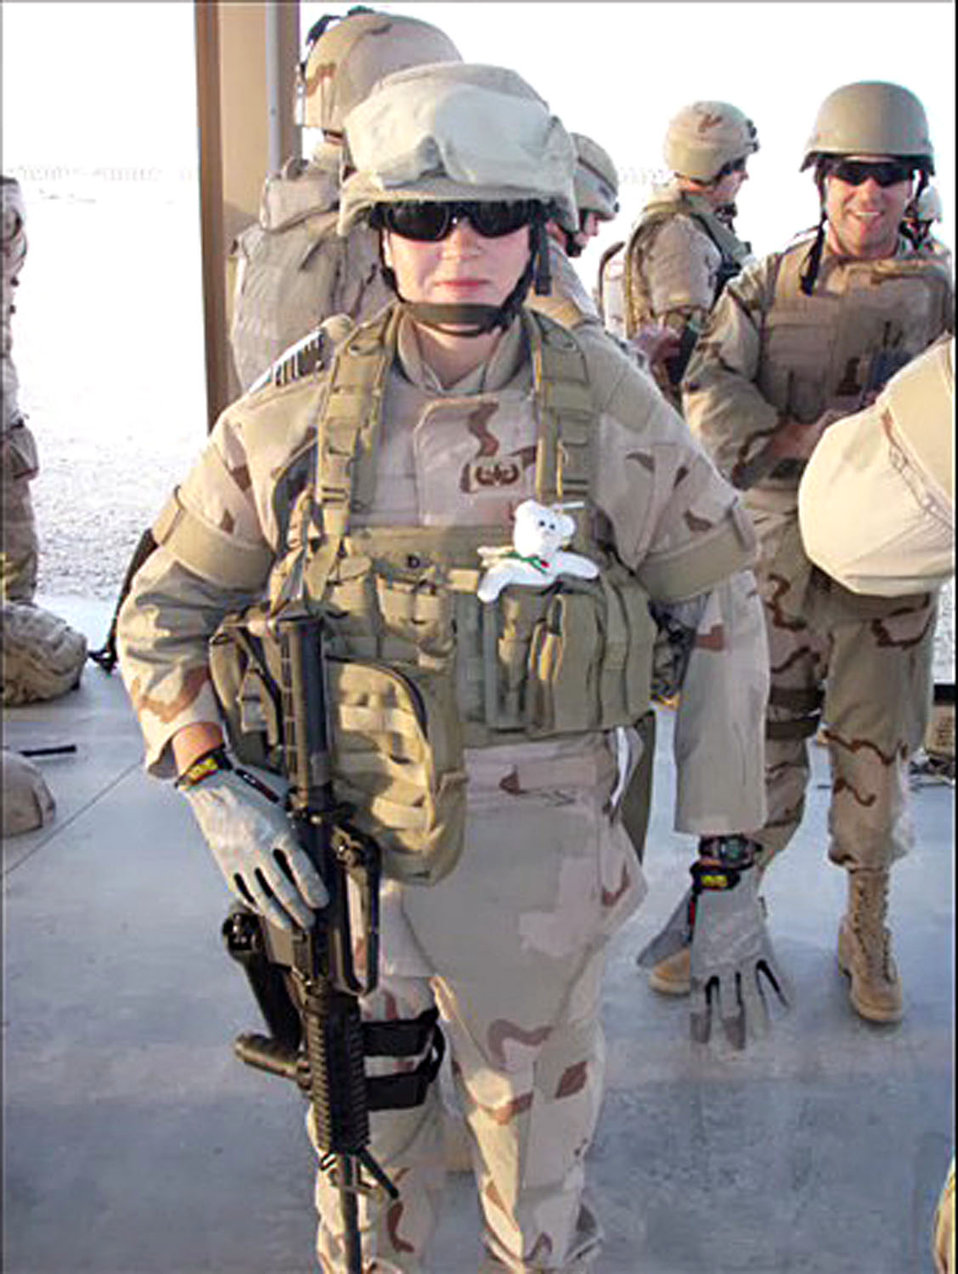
Hill mourns the loss of 3 Airmen

Senior Airman Elizabeth A. Loncki was an explosive ordnance disposal Airman serving in Iraq and was killed defusing a car bomb when it detonated Jan. 7. She was deployed from the 775th Civil Engineer Squadron at Hill Air Force Base, Utah.